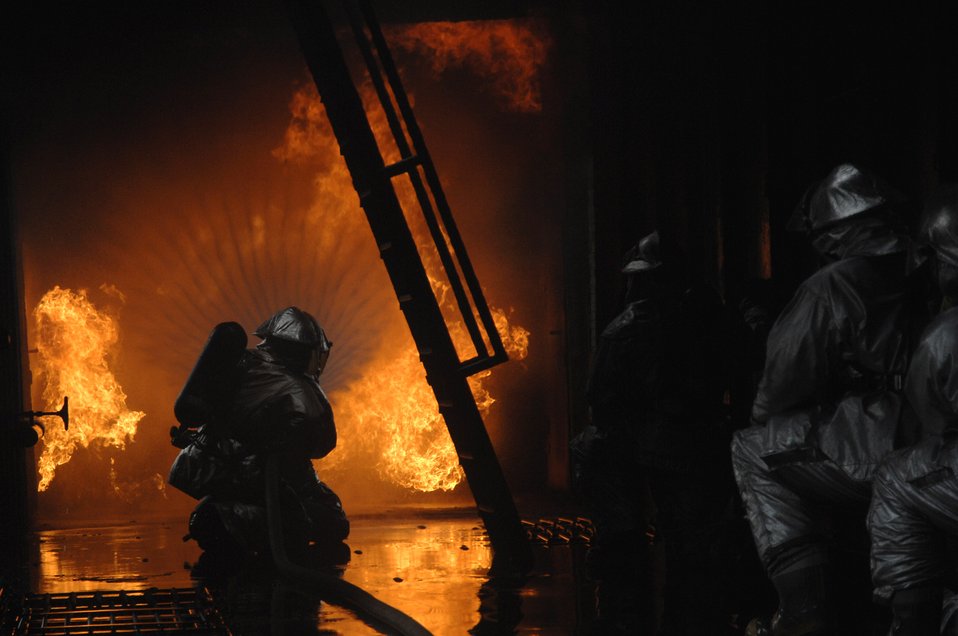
Battling the heat

48th Civil Engineer Squadron firefighters attack a simulated cargo fire inside an aircraft fire trainer March 8 at Royal Air Force Mildenhall, England. Firefighters must train constantly to stay proficient in their aircraft rescue and firefighting skills.